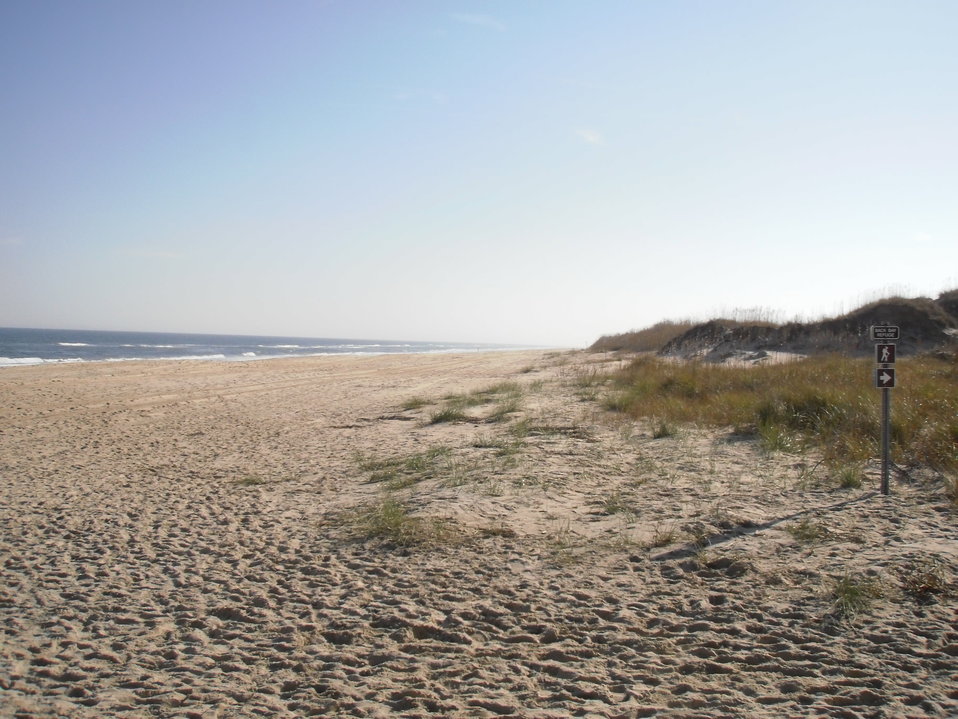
Back Bay National Wildlife Refuge

Beach at Back Bay National Wildlife Refuge in Virginia.